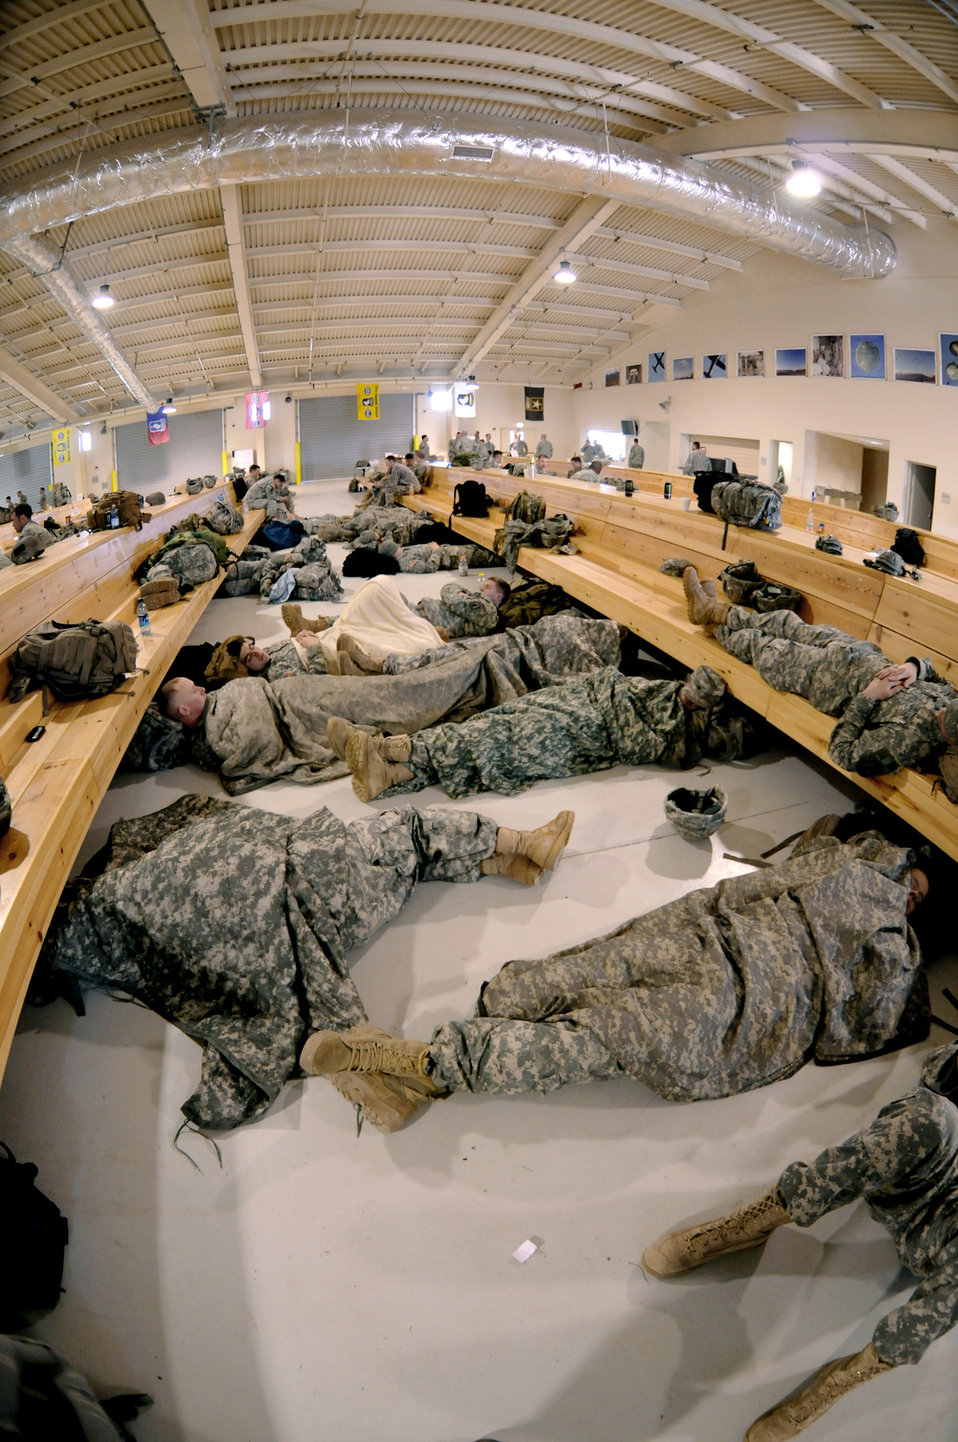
8th Air Support Operations Squadron hosts Jump Week

Members of the U.S. Army 173rd Airborne Brigade Combat Team rest after they jumping from a C-17 Globemaster III during a joint coalition training exercise March 23. More than 1,400 personnel from the 173rd Airborne Brigade Combat Team, the 8th ASOS and Italian army paratroopers participated in the weeklong event.